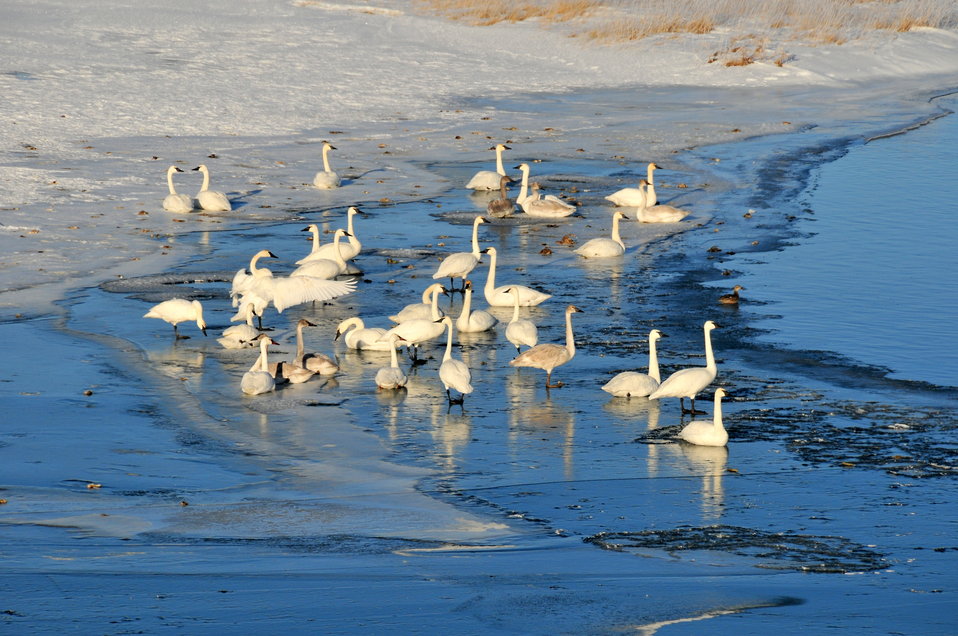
Trumpeter Swans wintering along Green River on Seedskadee NWR 01

Trumpeter swans wintering on Seedskadee NWR have been increasing over the last decade. A high count of 304 in 2014. Open water below Fontenelle Dam, abundant submerged aquatic vegetation in the Green River, and reduced disturbance in the winter months provide the conditions needed for trumpeters in the winter months.